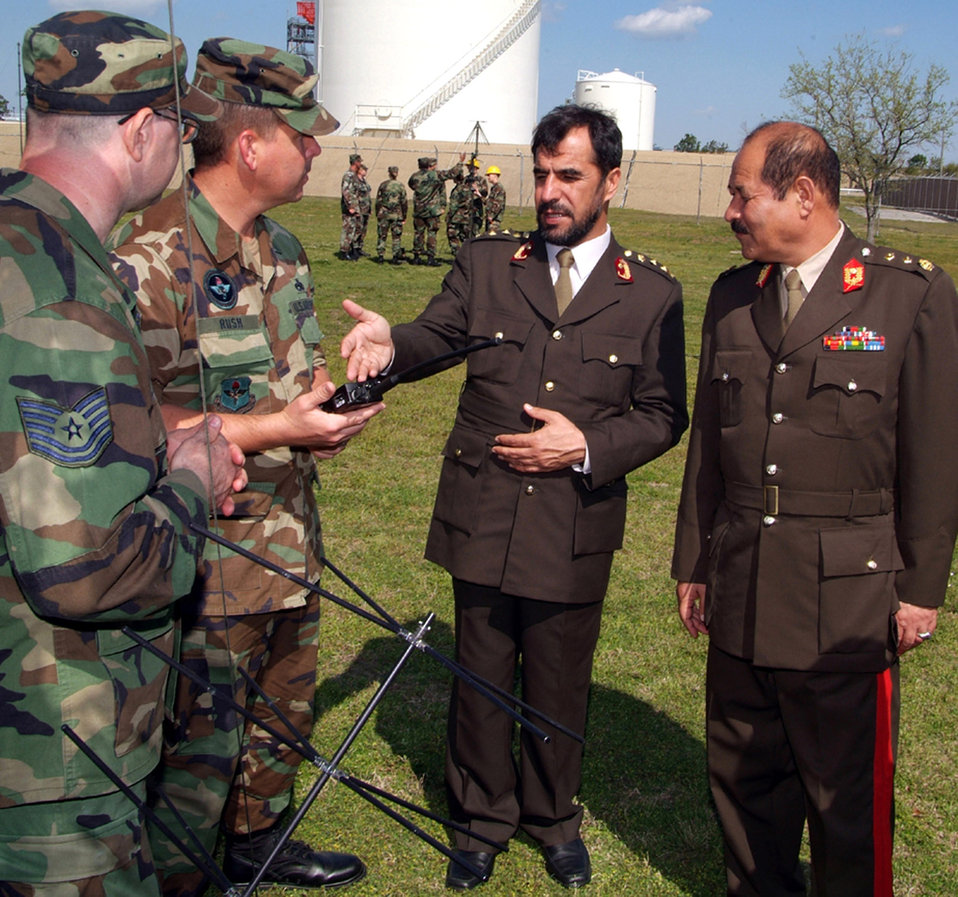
Afghan generals visit Air Force training facilities

Technical Sgt. Joseph Carello and Master Sgt. Edward Rush talk to Col. Said Farooq Yosuf Zai and Maj. Gen. Mehrab Ali about a multi-band interteam radio March 16 at Keesler Air Force Base, Miss. The officers are members of the Afghan National Army. Sergeants Carello and Rush are instructors with the 338th Training Squadron here.